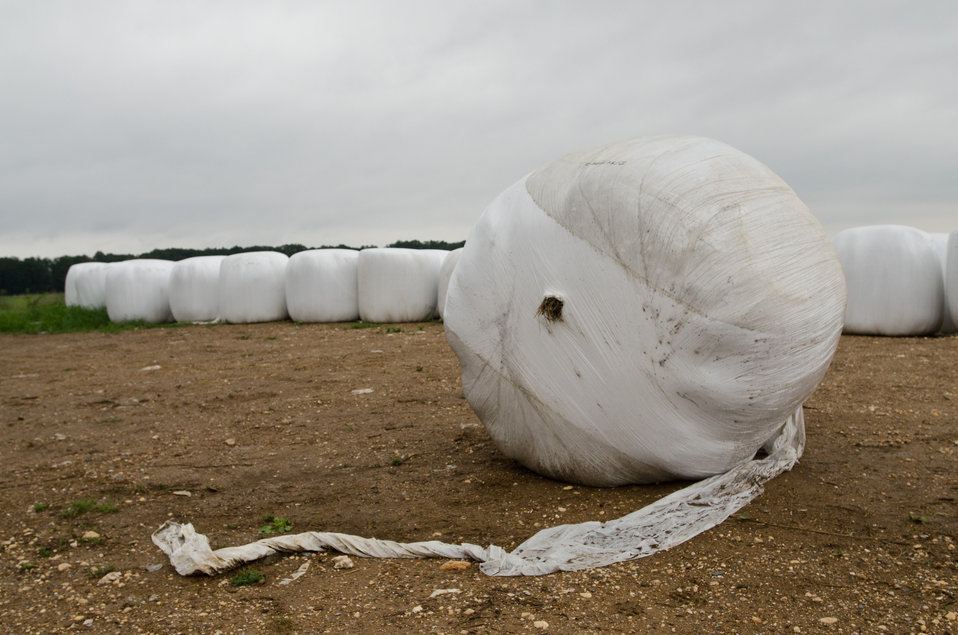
White plastic wrapped bales of pasture grass and alfalfa have been fermenting for months to create sweet silage that stores well and can be used to feed cattle at varying amount all year long at Nick’s Organic Farm is owned by Nick Maravell in Adamstown, MD on Friday, July 12, 2013. The fermentation process improves the taste and increases the vitamin levels in it. The farm produces Black Angus beef, chicken, turkey, eggs, hay, soybeans, corn, alfalfa, orchard grass, rye; and other crops. The cattle are 100% grass-fed receiving certified organic pasture, certified organic hay (in winter), water and mineral salts mixed with sea kelp. The cattle are not fed hormones, antibiotics or animal products. Poultry feed from grain is ground from organic grain. The poultry also graze on organic pastures. The farm has conducted on-farm research with federal, state and non-profit agencies to refine organic practices. An organization such as the U.S. Department of Agriculture (USDA) Agricultural Research Service (ARS) center in Beltsville has been able to conduct research to improve organic crops and to breed and manage the cattle so that they have.